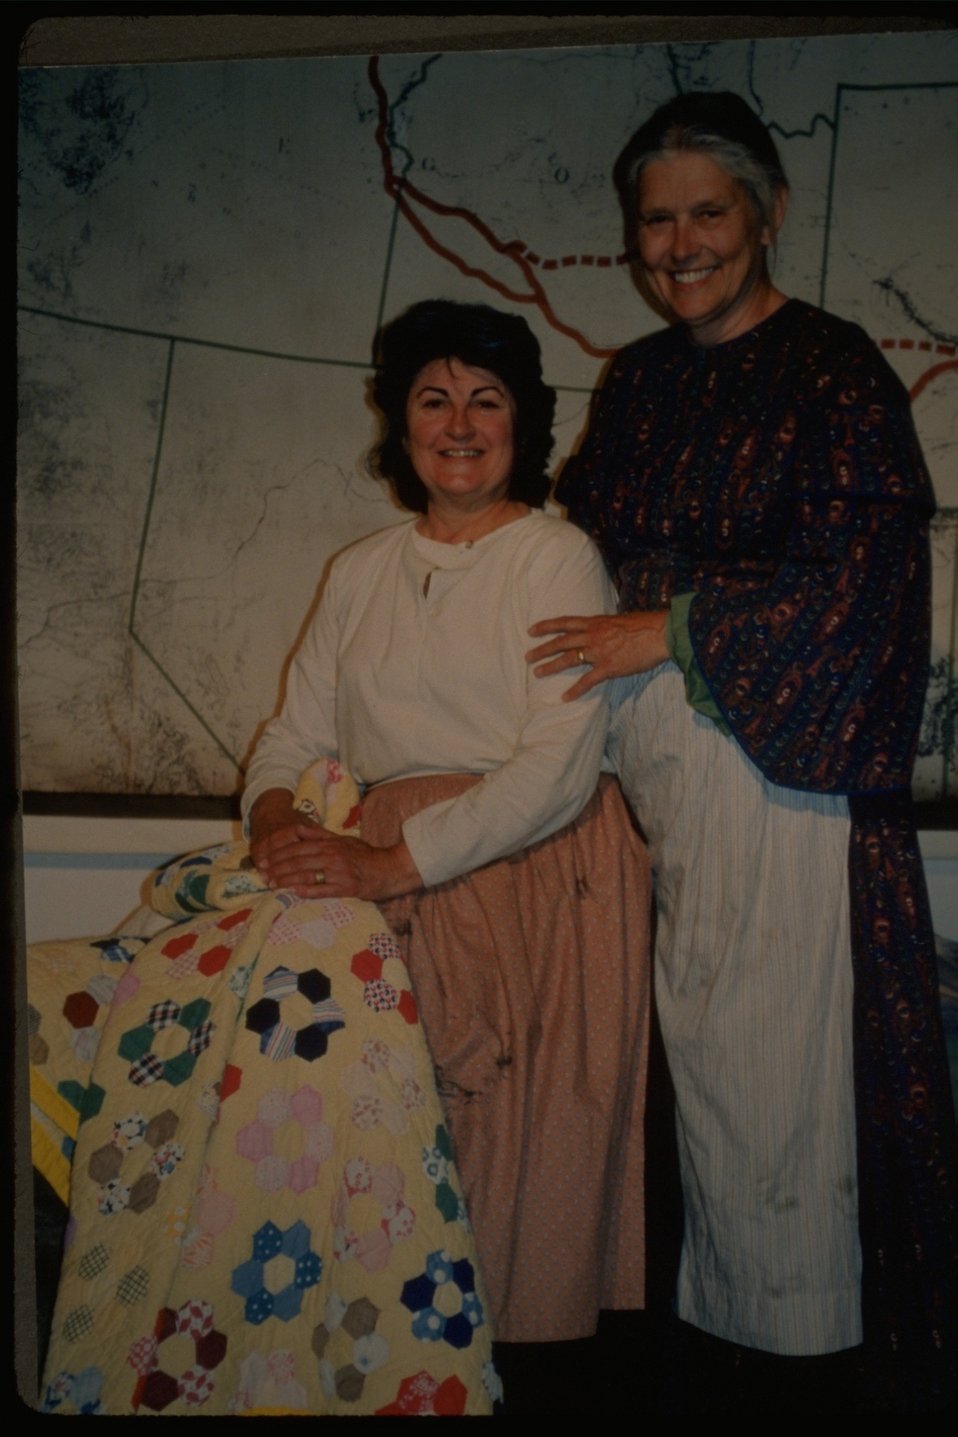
Theater performance --Jean Marihelen-- at the NHOTIC.